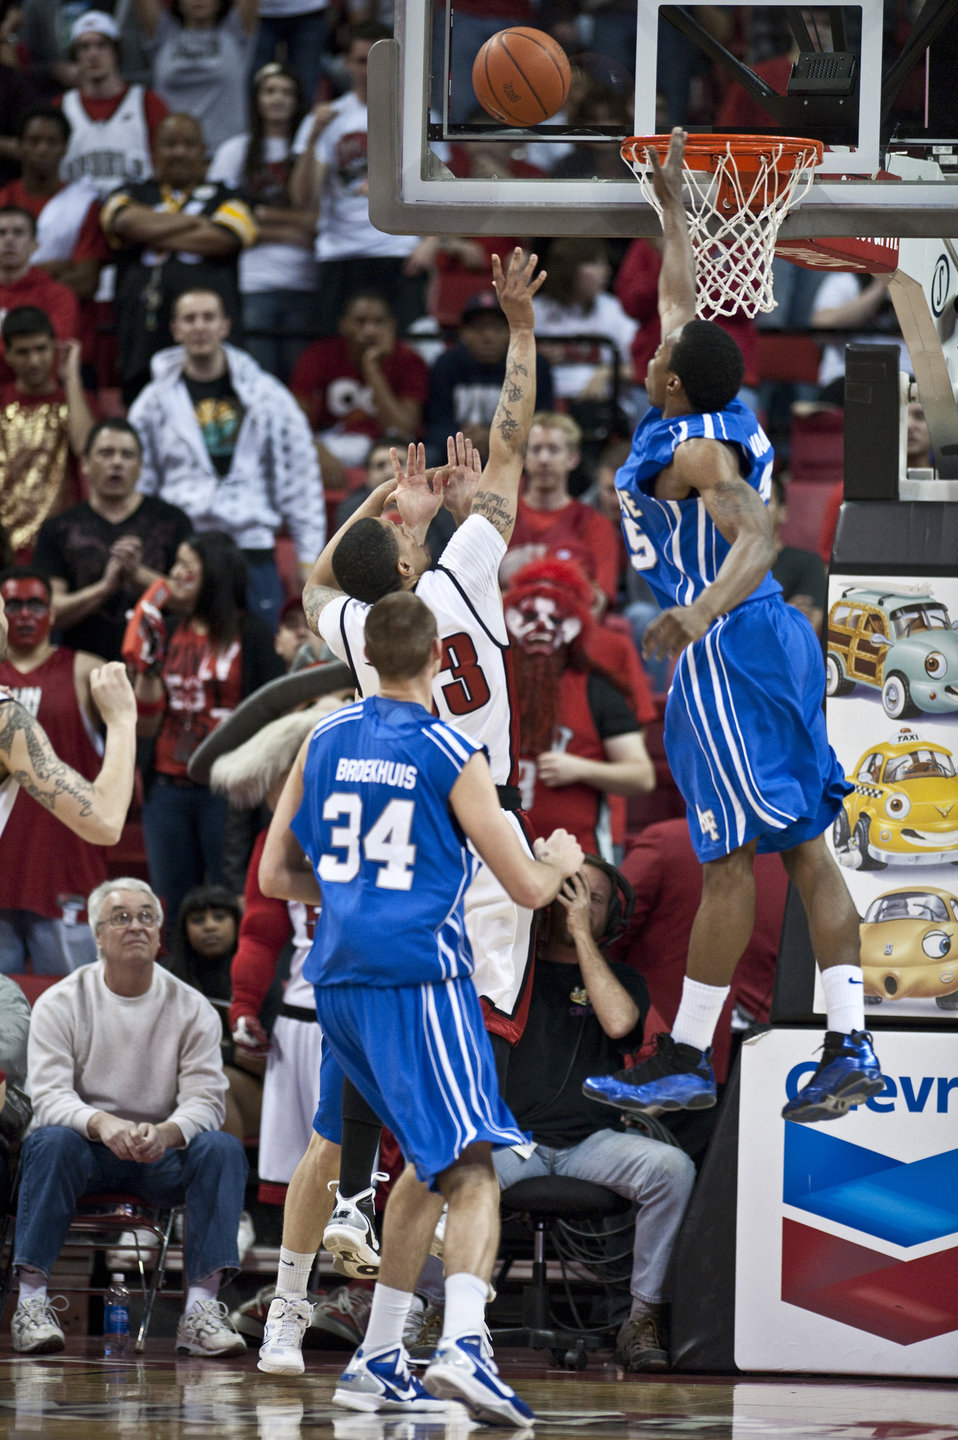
Falcons versus Rebels

Runnin' Rebels senior guard Tre'Von Willis scores a layup over the Falcons defenders Feb. 15, 2011, at the Thomas and Mac Center in Las Vegas, Nev. The Air Force Falcons came up short against UNLV 49-42, making their record 13-11 overall and 4-7 in the Mountain West Conference.